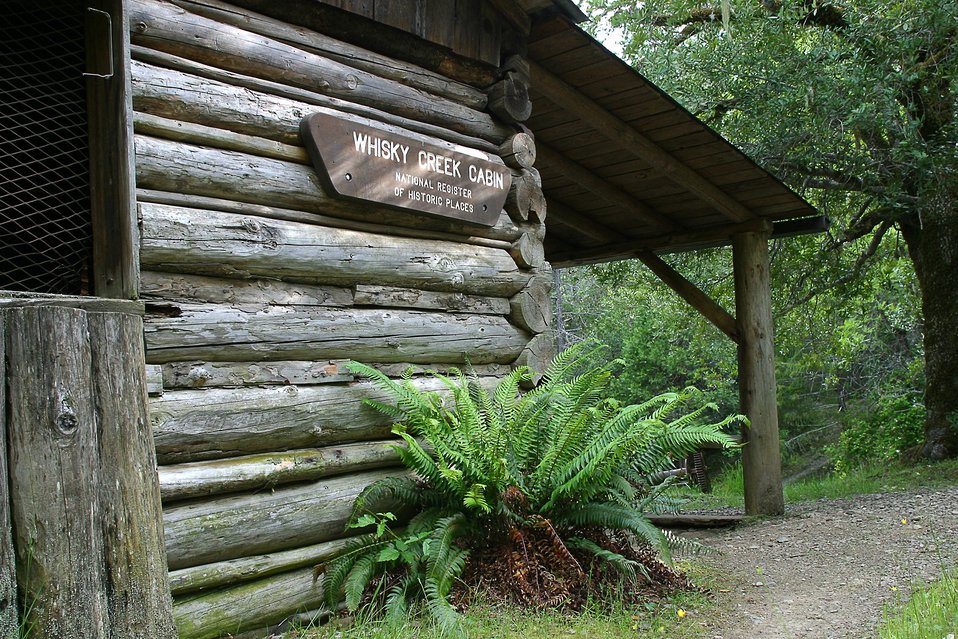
Whisky Creek Cabin along the Wild section of the Rogue River from Grave Creek to Foster Bar. 3100 cfs at Grants Pass and 5300 at Agness.